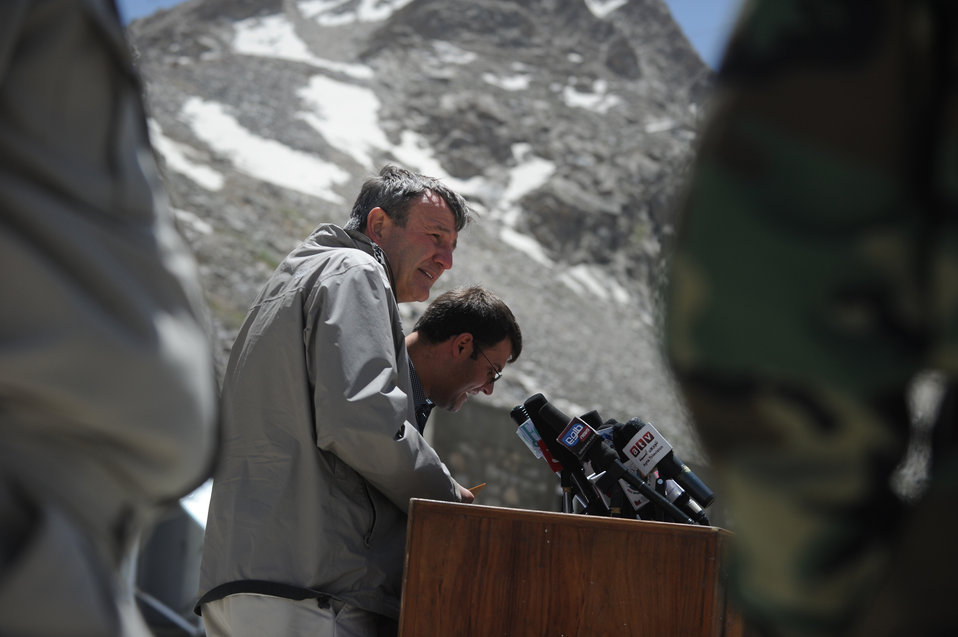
U.S. Ambassador Karl W. Eikenberry makes remarks during a ceremony to mark the beginning of renovations at the Salang Tunnel on the border of Parwan and Baghlan Provinces, Afghanistan, on Wednesday, June 15, 2011. (S.K.Vemmer/Department of State)